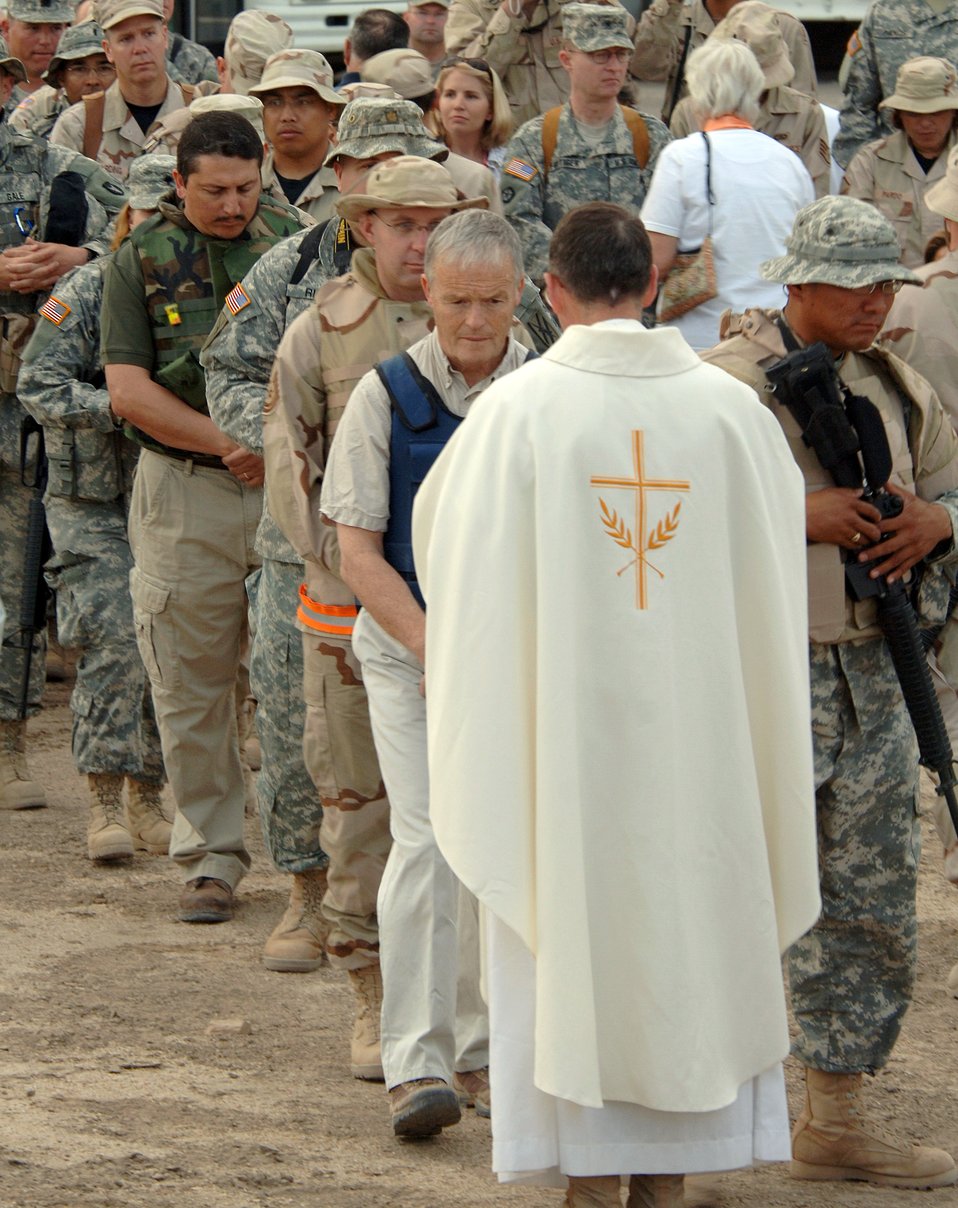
Easter services in an ancient land

Chaplain (Maj.) Larry Bailey delivers the Holy Eucharist to servicemembers from Ali Base, Iraq, during Easter service at the House of Abraham in Ur, Iraq, on Sunday, April 16, 2006. Abraham is considered by religious scholars to be the father of three religions: Islam, Judaism and Christianity. Chaplain Bailey is assigned to the 407th Air Expeditionary Group